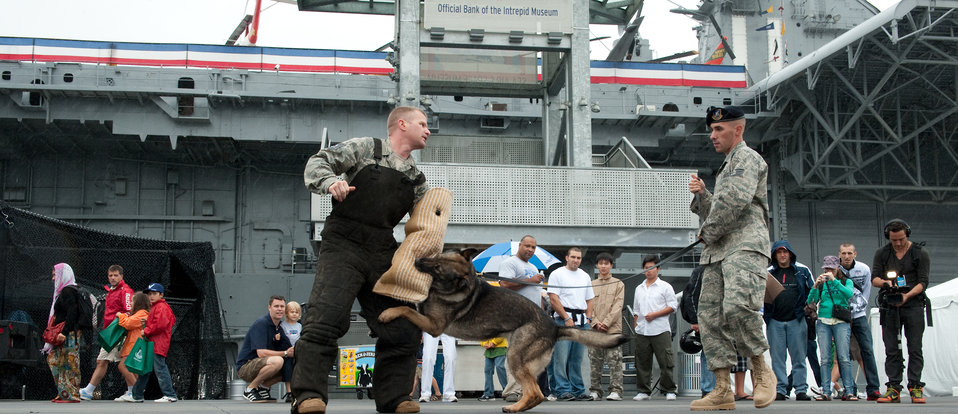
Air Force Week New York City Proclamation Ceremony

Tech. Sgt. Tim Shaw (in protective clothing) is the decoy that a miitary working dog trains to attack to protect the handler, Staff Sgt. Kyle Lutman (right, holding leash), during a training demonstration, following the Air Force Week New York City proclamation ceremony at the USS Intrepid on Aug. 24, 2010. Sgts. Shaw and Lutman are assigned to the 87th Security Forces Squadron, McGuire Air Force Base, Del. The event at the Intrepid Sea, Air & Space Museum was highlighted by a six-ship flyover by the USAF Thunderbirds. The Honorable Michael Donley, Secretary of the Air Force attended, along with General Raymond Johns, Commander of Air Mobility Command. The Police Commissioner of the City of New York, the Honorable Raymond Kelly, represented NYC. Mr. Greg Kelly of